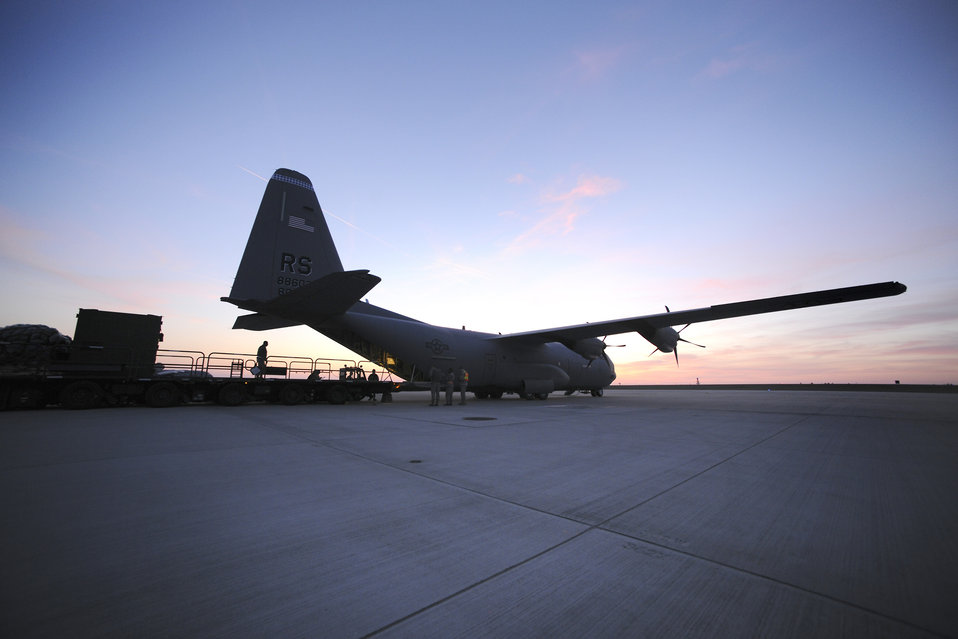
Operation Odyssey Dawn

SPANGDAHLEM AIR BASE, Germany ? A C-130J Super Hercules from the 37th Airlift Squadron, Ramstein Air Base, Germany, waits to be loaded with cargo here in support of Operation Odyssey Dawn March 21. Joint Task Force Odyssey Dawn is the U.S. Africa Command task force established to provide operational and tactical command and control of U.S. military forces supporting the international response to the unrest in Libya and enforcement of United Nations Security Council Resolution (UNSCR) 1973. UNSCR 1973 authorizes all necessary measures to protect civilians in Libya under threat of attack by Qadhafi regime forces. JTF Odyssey Dawn is commanded by U.S. Navy Admiral Samuel J. Locklear, III.